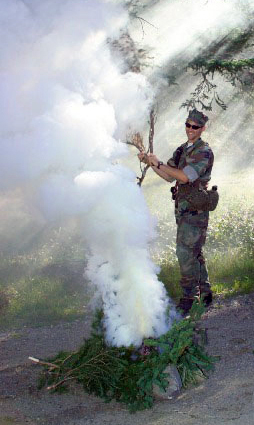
Airman becomes Astronaut

NASA astronaut candidate James Dutton Jr. builds a signal fire during 2004 ASCAN land survival training in the wilderness of Maine.